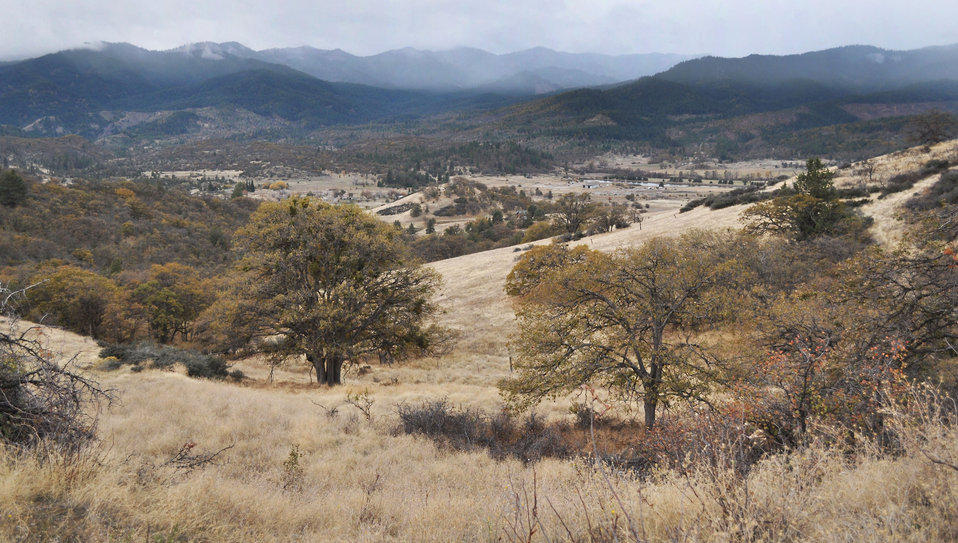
Colestin Valley facing east